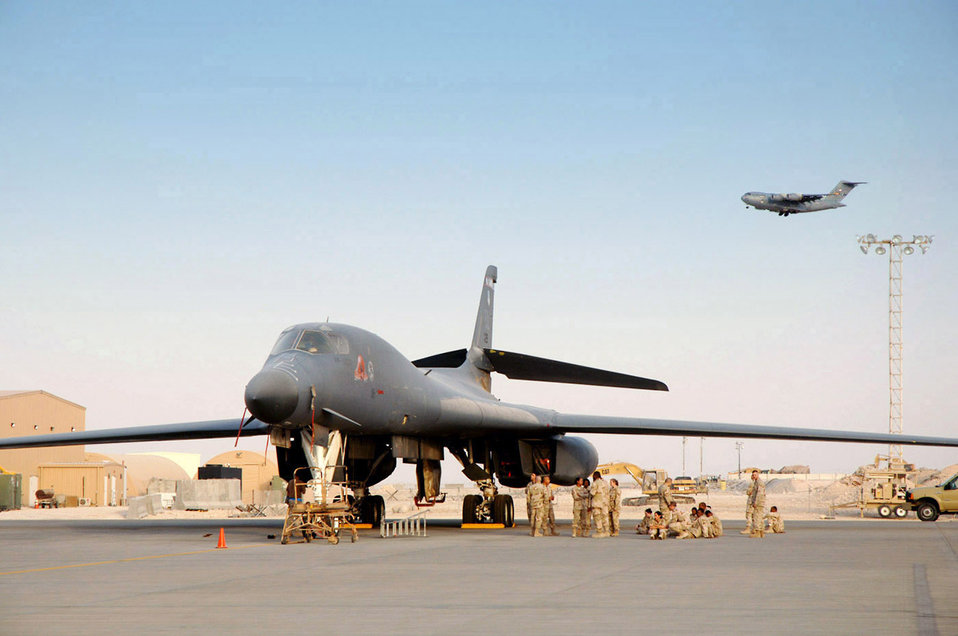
Armed and ready

Maintainers ensure this B-1B Lancer is ready to go as a C-17 Globemaster III prepares to land at a forward deployed location in Southwest Asia July 1.